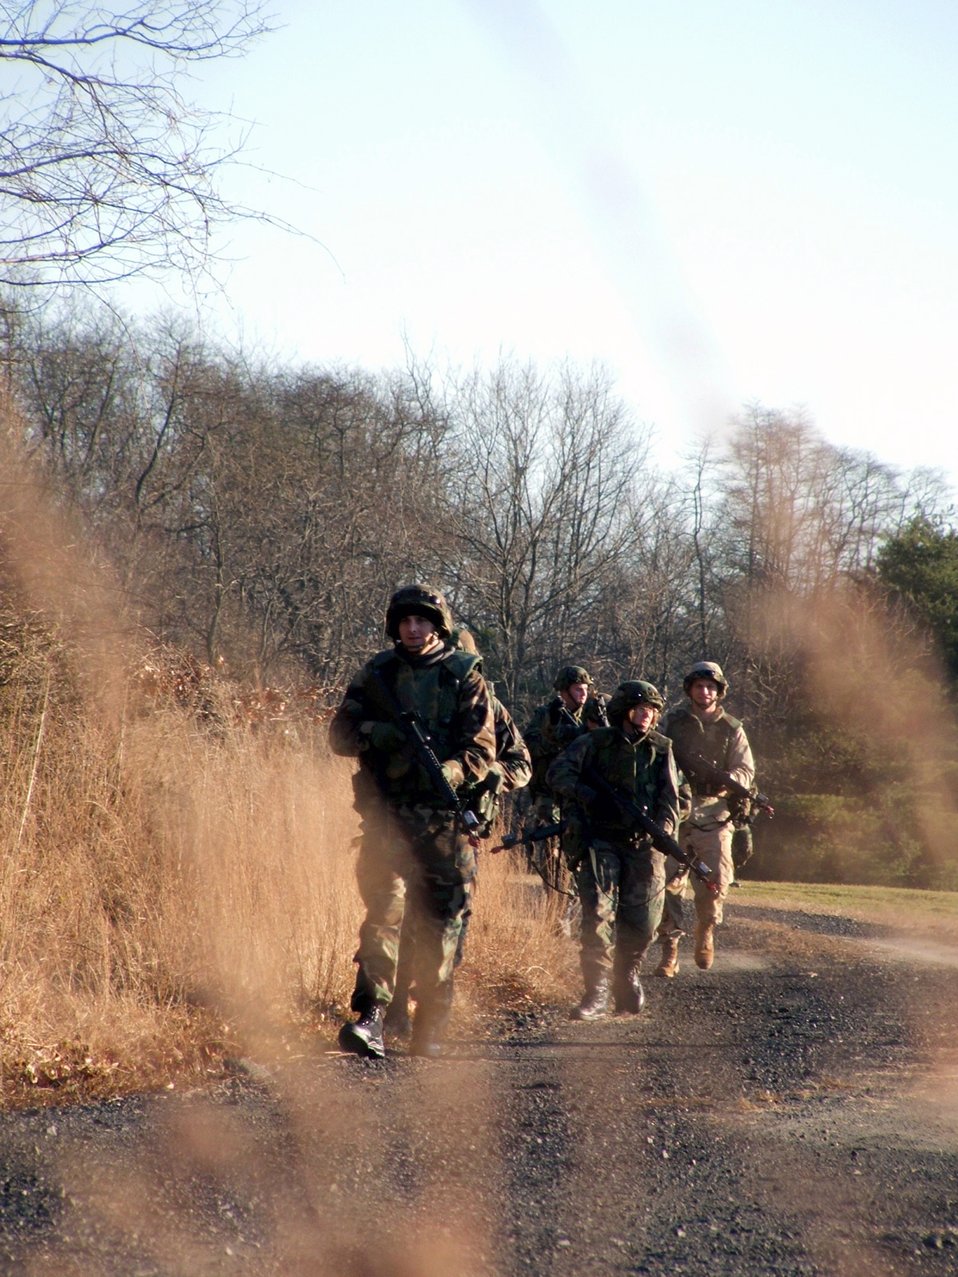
Contingency skills course

FORT DIX, N.J. (AFPN) -- Airmen participating in Air Force Integrated Contingency Skills Training Course 06-1 here practice a patrol during a training session on combat patrol and tactics on a range. The CST course has more than 100 Airmen from multiple Air Force career fields participating and is taught by the Air Mobility Warfare Center's 421st Combat Training Squadron. The training teaches Airmen everything from combat tactics and patrolling to convoy operations and combat first aid.